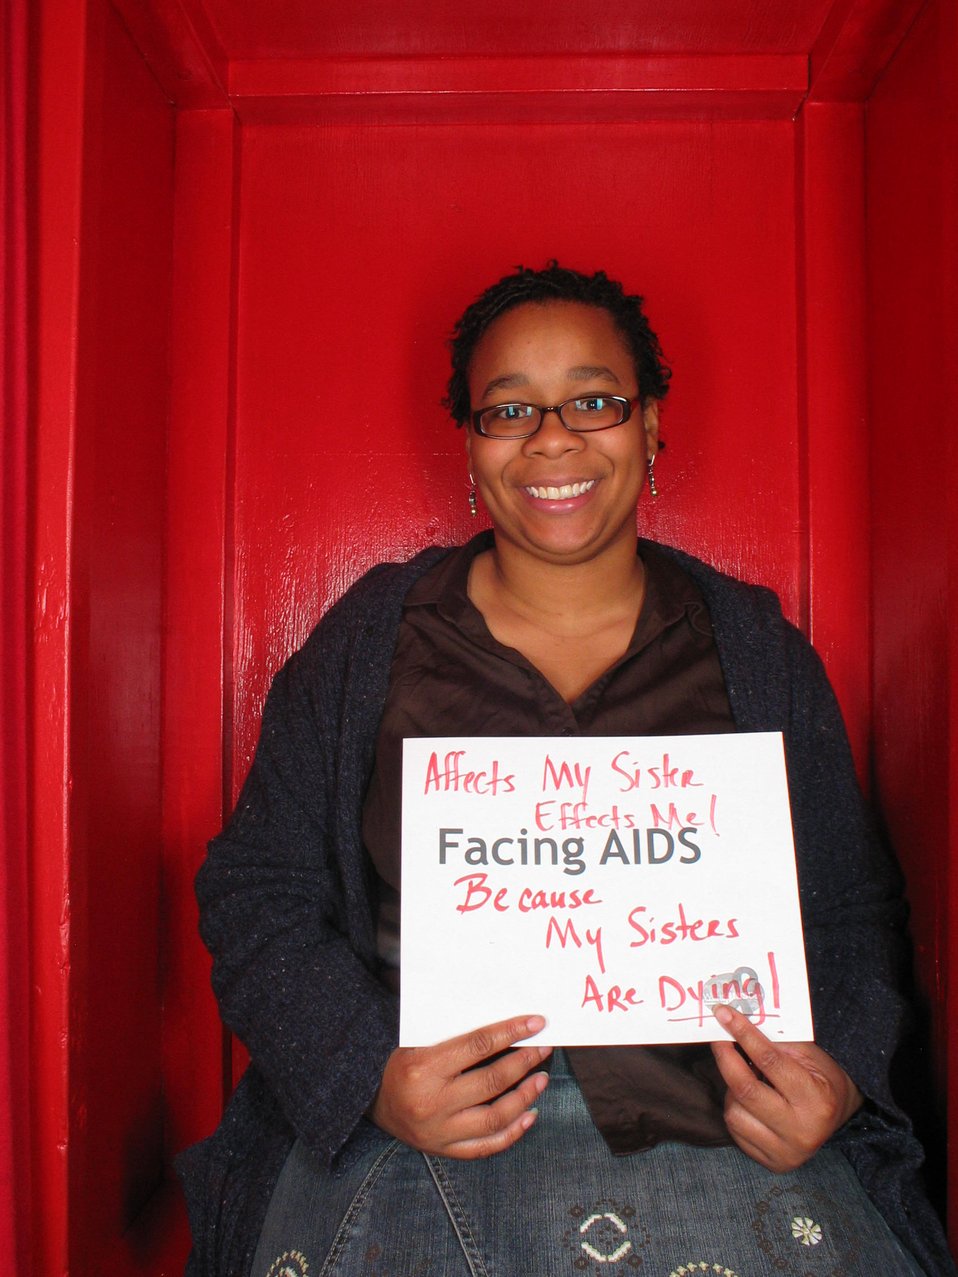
Facing AIDS because my sisters are dying!